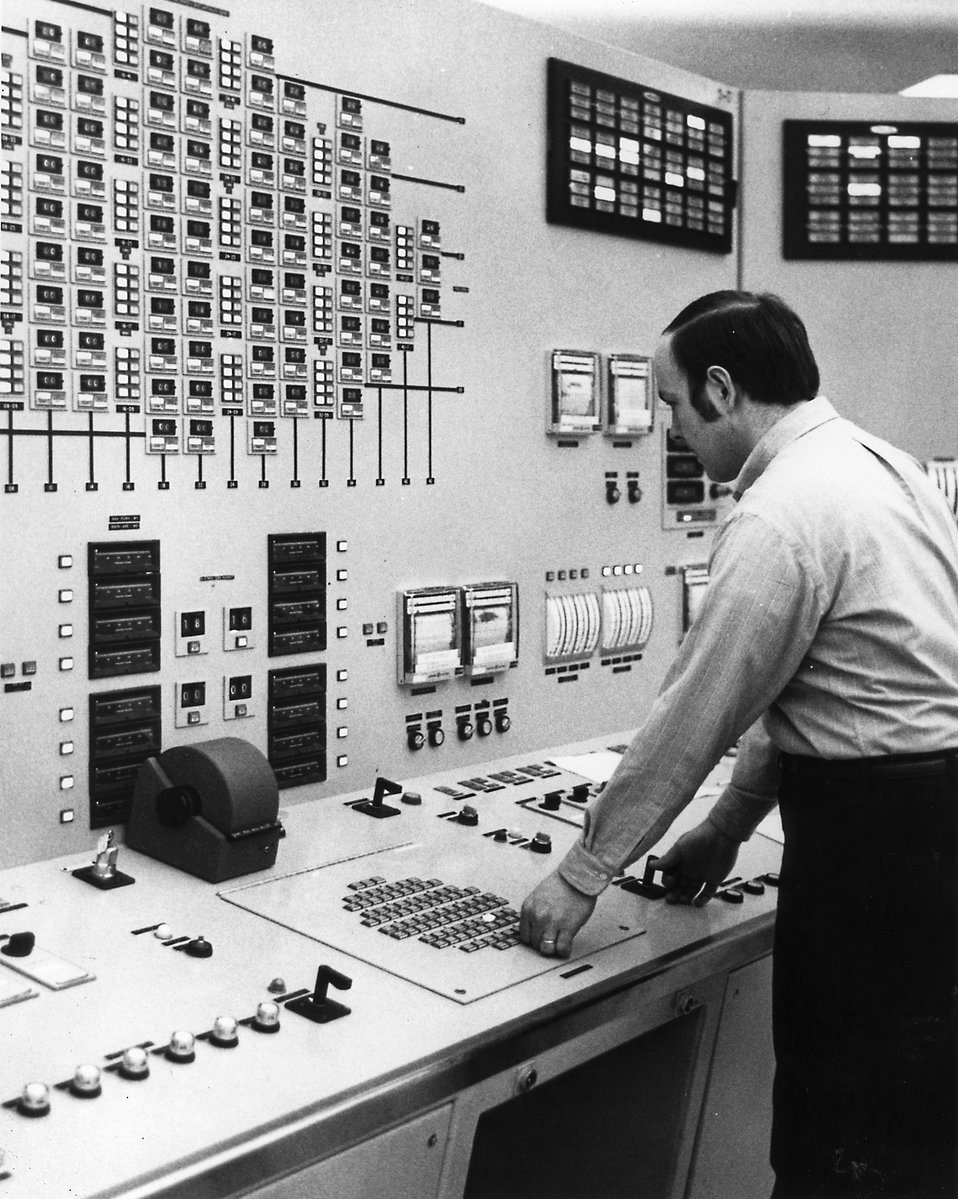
Control room of the Vermont Yankee Nuclear Generating Station near Vernon, Vermont. Circa 1974.